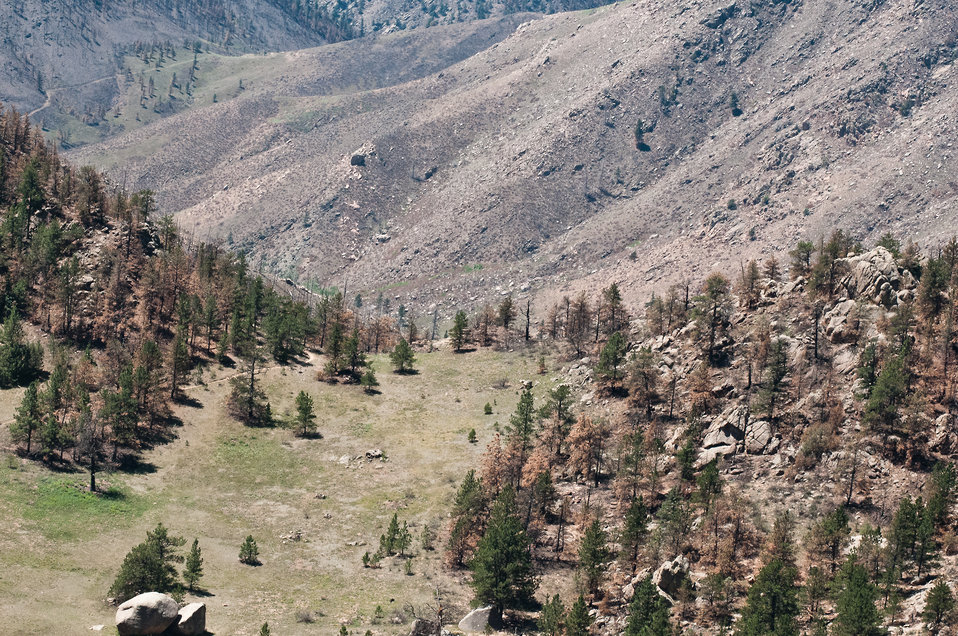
This is the Hewlett Gulch Trail, in the Poudre Canyon area, on Friday, July 20, 2012, near Fort Collins, Colorado. It was the start point of the Hewlett Gulch Fire on May 14. This mountain ridge saddle had a scenic view of the Roosevelt National Forest. It is also tinder dry and at a place where the slopes tend to funnel wind through this low point. The blackened areas clearly show the spread of the fire influenced by wind, terrain and available fuel. At its peak more than 400 firefighters were battling fires pushed by 50 mph winds. When the last embers were cooled, more than 12-square miles lay blacked at a cost of approximately 3.2 million dollars to fight. The aerial distribution of straw has successfully kept the Seaman Reservoir, drinking water resource for the City of Greeley, clean and clear. Forest Service lands receive straw, while private and other lands receive a seed mix and straw to promote ground cover plant growth on ash-covered lands. In total, 1,800 tons of straw will be applied during the 14-day operation. One quarter of the cost was paid by the City of Greeley and the U.S. Department of Agriculture funded the remainder. Unmitigated areas have turned famous Colorado clear water to nearly black flows of water heavily laden with ash, silt, and burnt debris that recent thunderstorms have already washed down from the mountainsides.